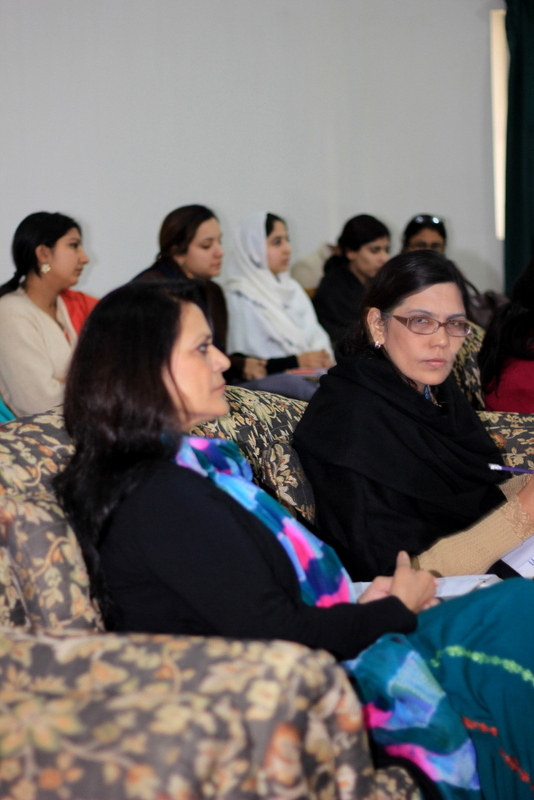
USAID Power Distribution Program-Energy Conservation Seminar at Multan Public School and Colleges for Girls, Multan.

The Staff of 25 teachers along with principal & vice principal of Mltan Public School & Colleges for Girls attended the seminar and appreciated the efforts made by USAID Power Distribution Program to spread such productive awareness among the young generation of Pakistan.